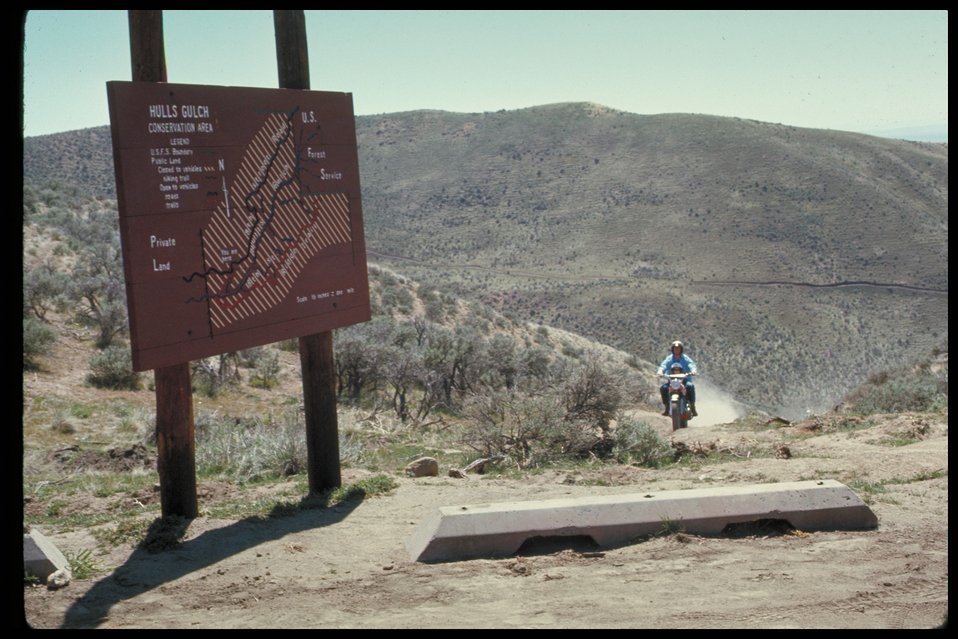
Motorcyclist and sign Boise Front OHV Off Highway Vehicles Four Rivers Field Office LSRD Lower Snake River District